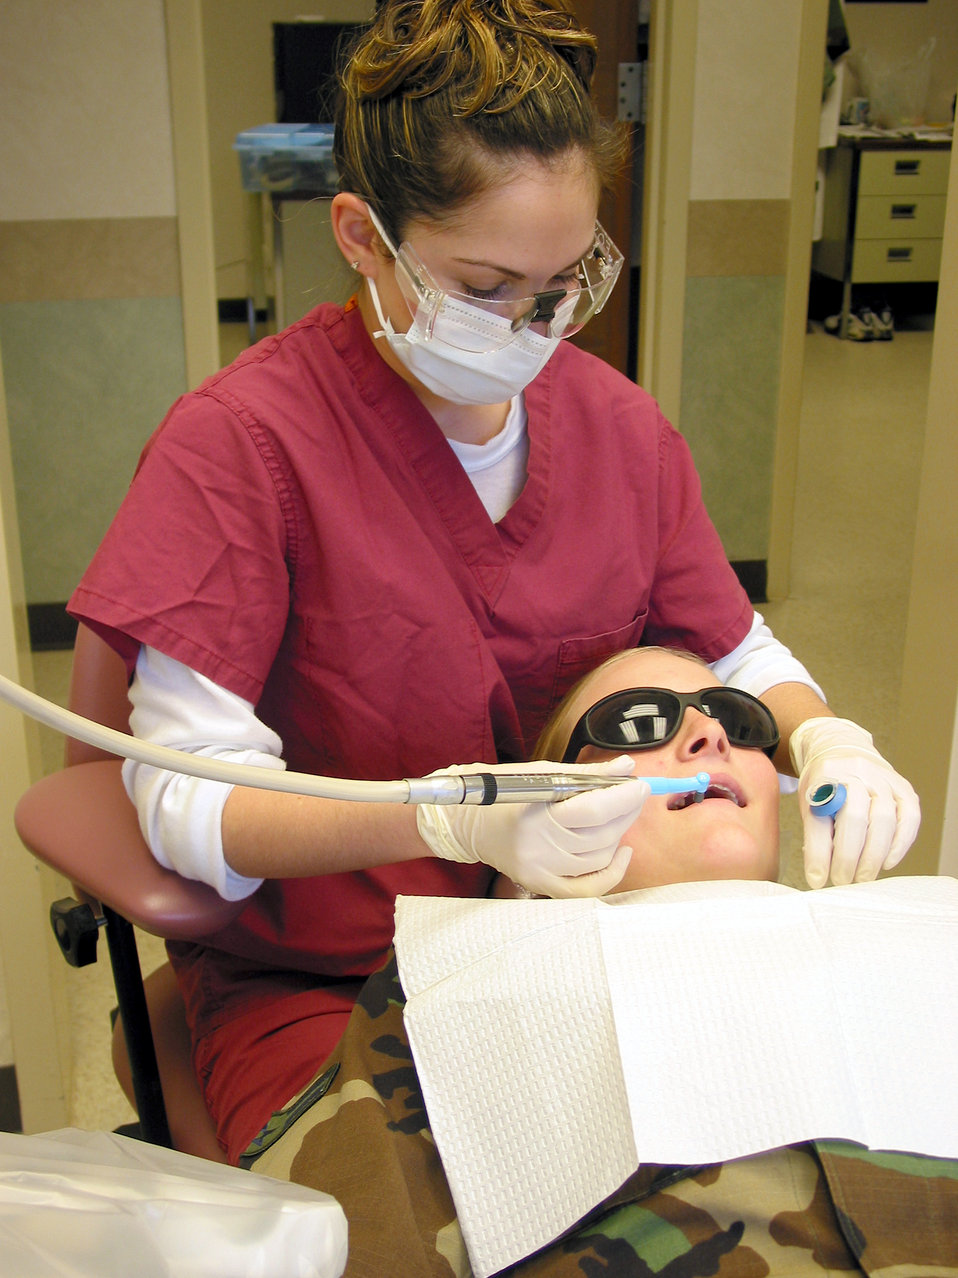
Cleaning teeth

CHARLESTON AIR FORCE BASE, S.C. -- Staff Sgt. Noreena Svoboda, a dental technician from McChord Air Force Base, Wash., cleans a patient's teeth. Sergeant Svoboda is enrolled in an Air Force-sponsored dental hygiene training scholarship program at Trident Technician College in Charleston, S.C.